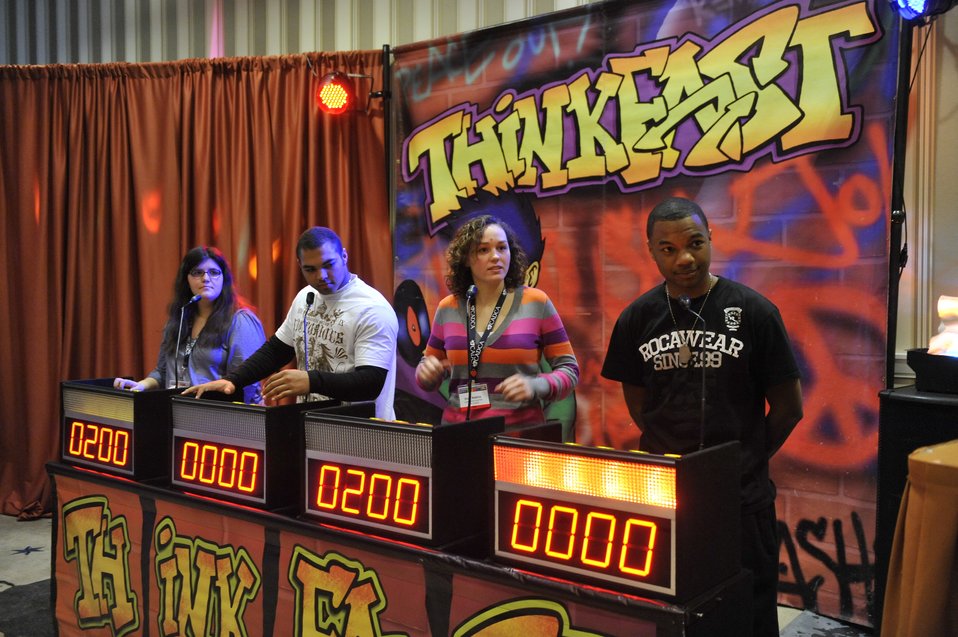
Teens answer questions during NIDA’s ThinkFast event at CADCA’s National Leadership Forum in DC.